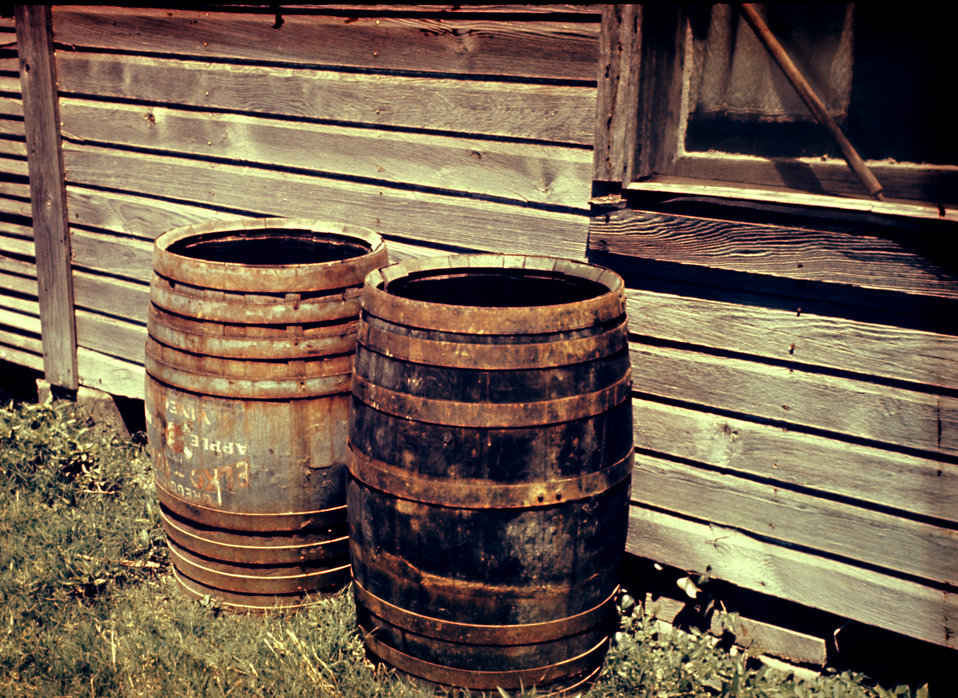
Domestic mosquitoes are often found breeding in rain barrels.